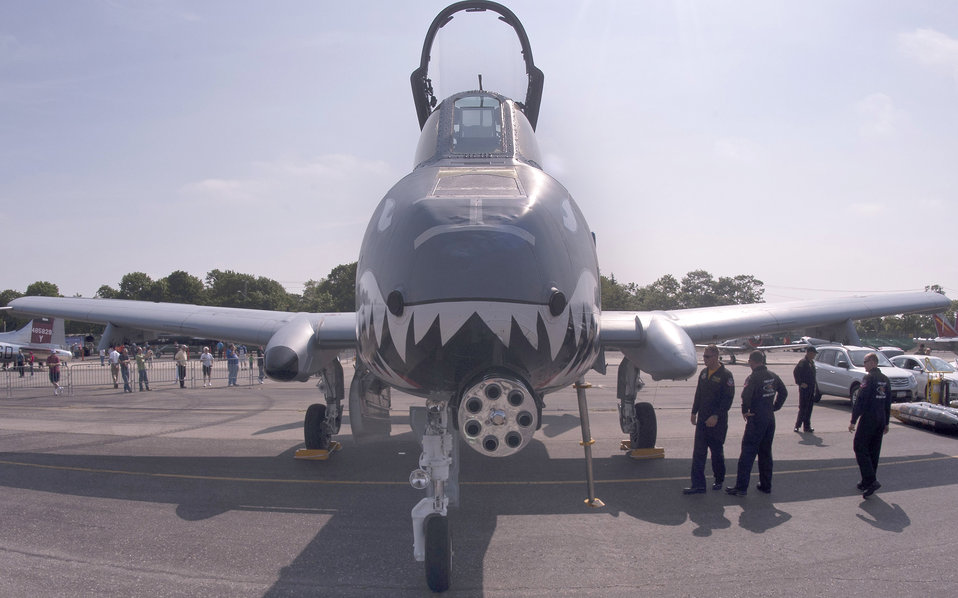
A-10 East Demonstration Team

Members of the A-10 East Demonstration Team conduct preflight checks on an A-10 Thunderbolt II May 28, 2011, prior to an air show at Jones Beach, N.Y.